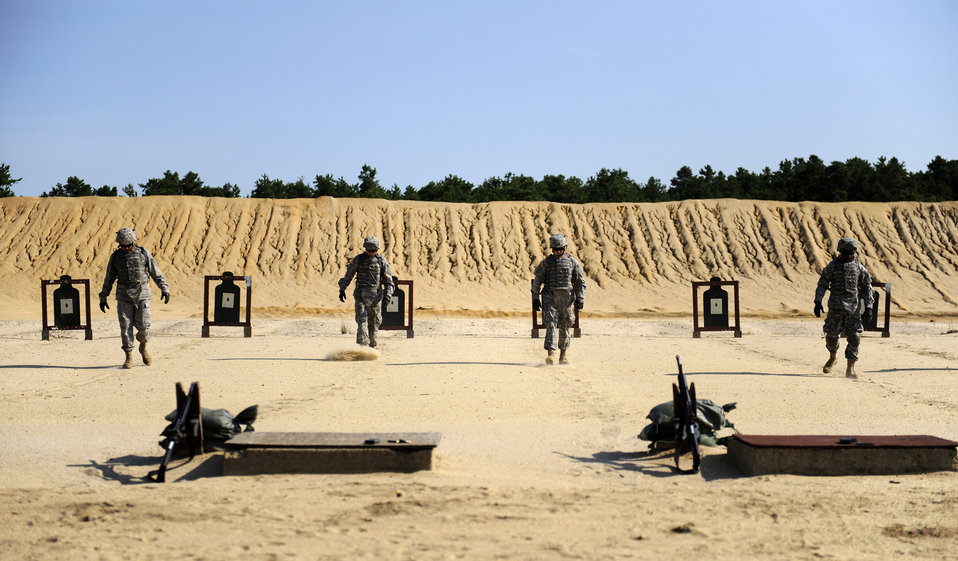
Airmen prepare for deployment

Soldiers, Sailors, Airmen and Coast Guardsmen mark their lanes during M-16/M-4 familiarization training Aug. 8 at Fort Dix, N.J. Combat Skills Training is a month-long Army training program that prepares Airmen for Joint Expeditionary Tasking combat roles augmenting the U.S. Army in support of operations Enduring and Iraqi Freedom.